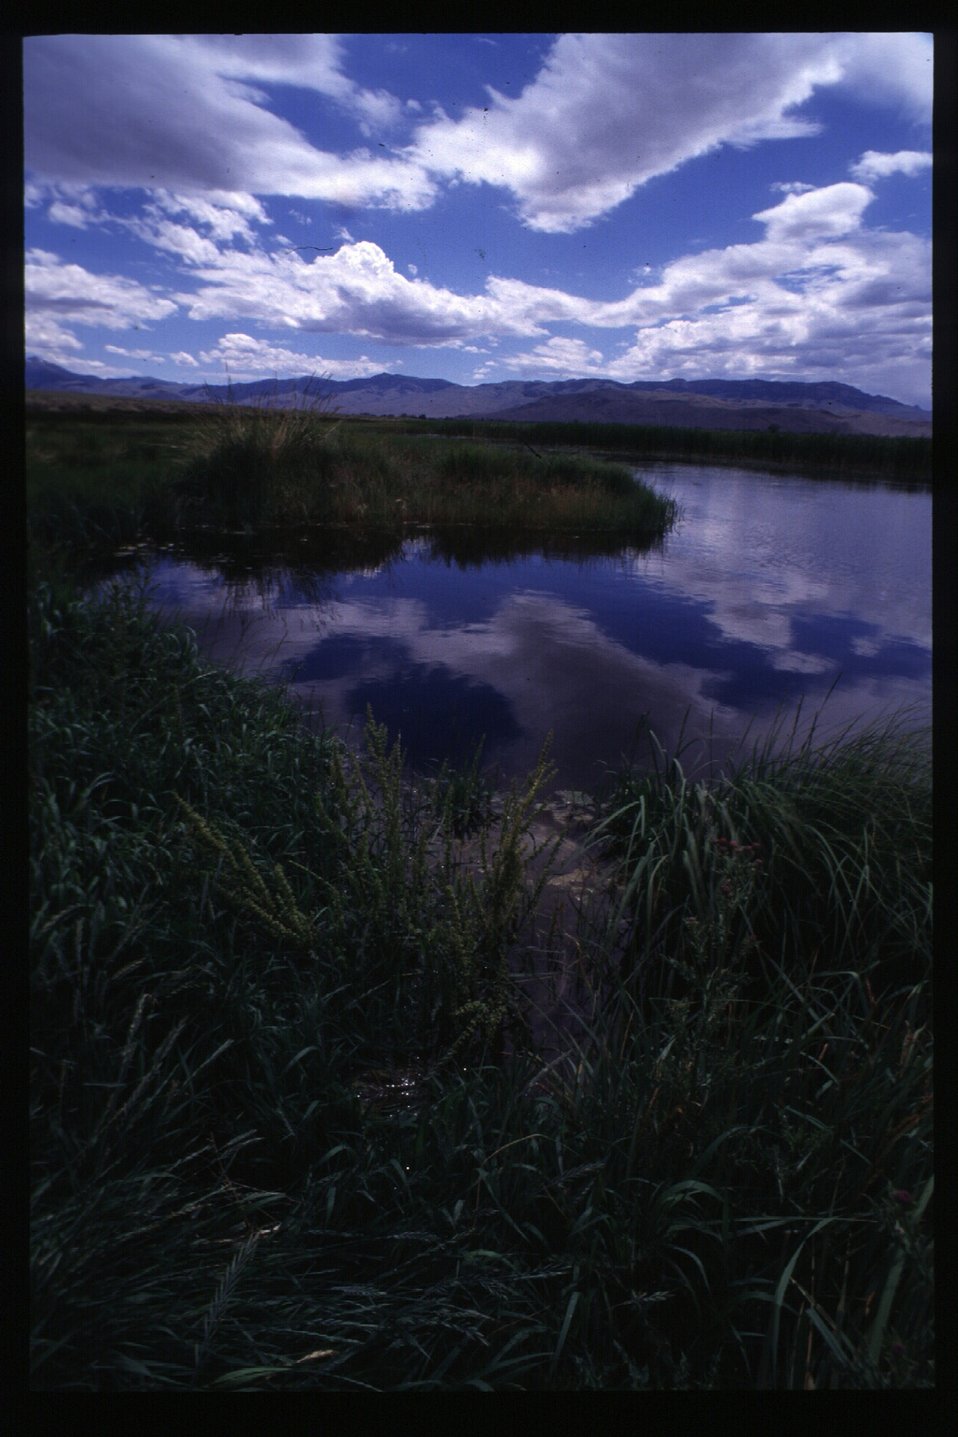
Wetlands, Chilly Slough Wildflowers and grasses Overview of south Unit Wetlands, Chilly Slough Wildflowers and grasses Overview of south unit Challis Field Office UCSC Upper Columbia Salmon Clearwater District